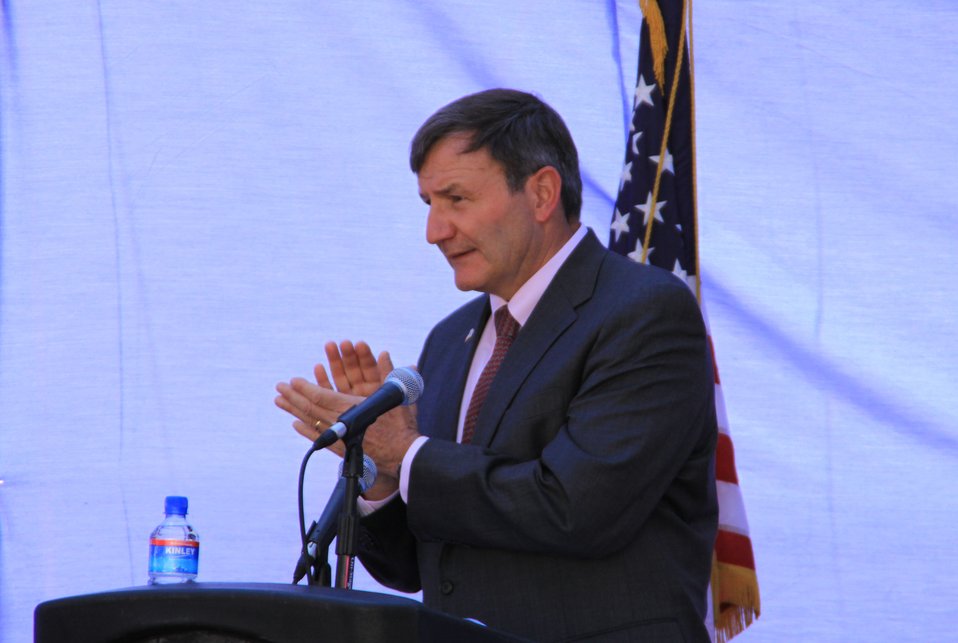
105 MW Tarakhil Power Plant Handover